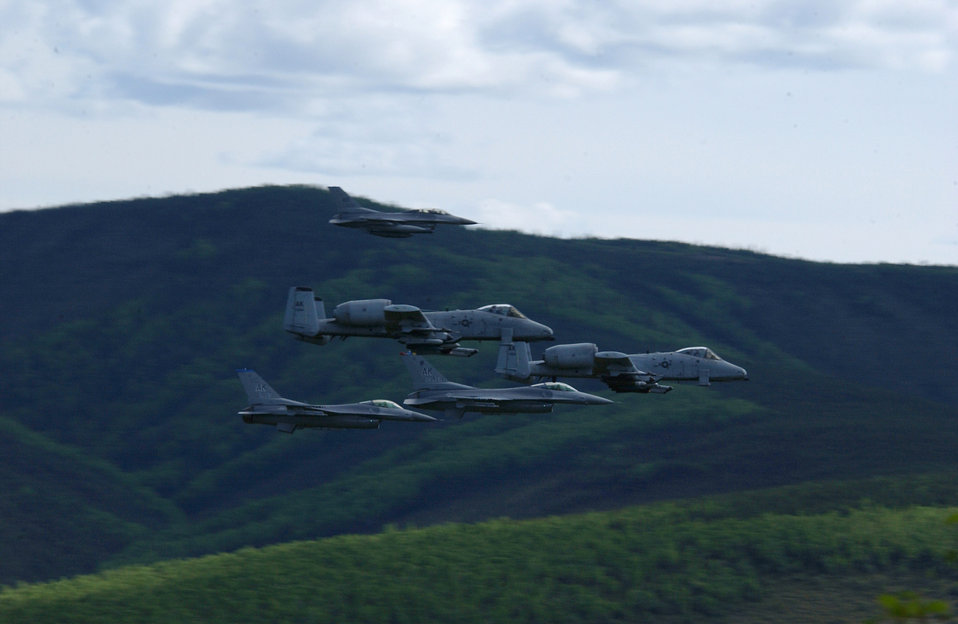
Air to ground power

Two A-10 Thunderbolt IIs and three F-16 Fighting Falcons fly in formation May 29 over the Pacific Alaska Range Complex in Alaska. The A-10s are from the from the 355th Fighter Squadron and the F-16s are assigned to the 18th Fighter Squadron, both from Eielson Air Force Base, Alaska. Members of the 18th FS conduct air operations for combat-ready F-16s working closely with 355th FS members to provide close-air support, forward air control, battlefield air interdiction, and offensive counter air.